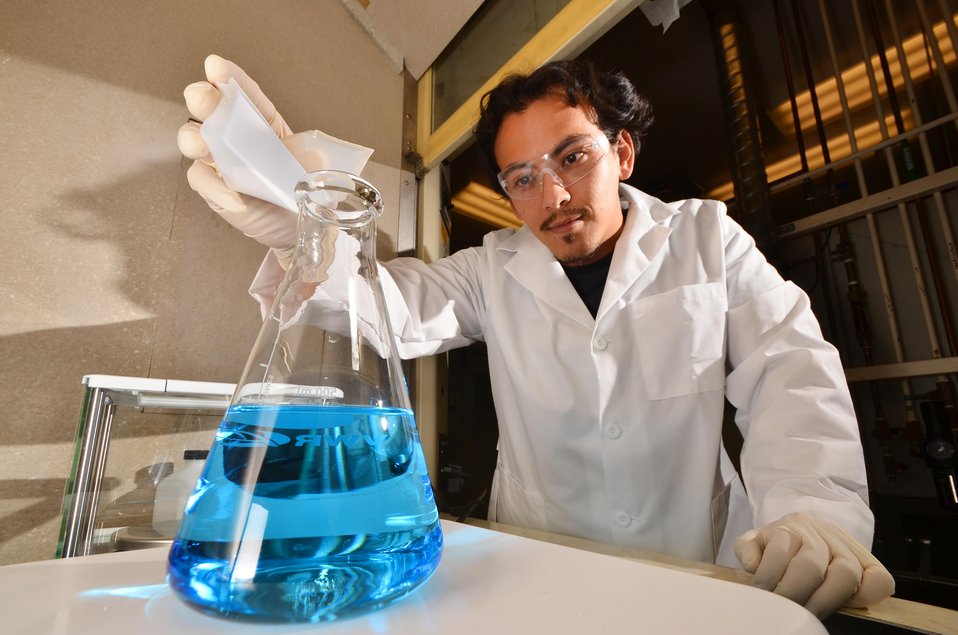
Shown is a copper-based ionic liquid at Sandia National Laboratory.

Scientists at Sandia National Laboratory have discovered a new family of liquid salt electrolytes that could lead to batteries with three greater energy density than other available storage technologies.